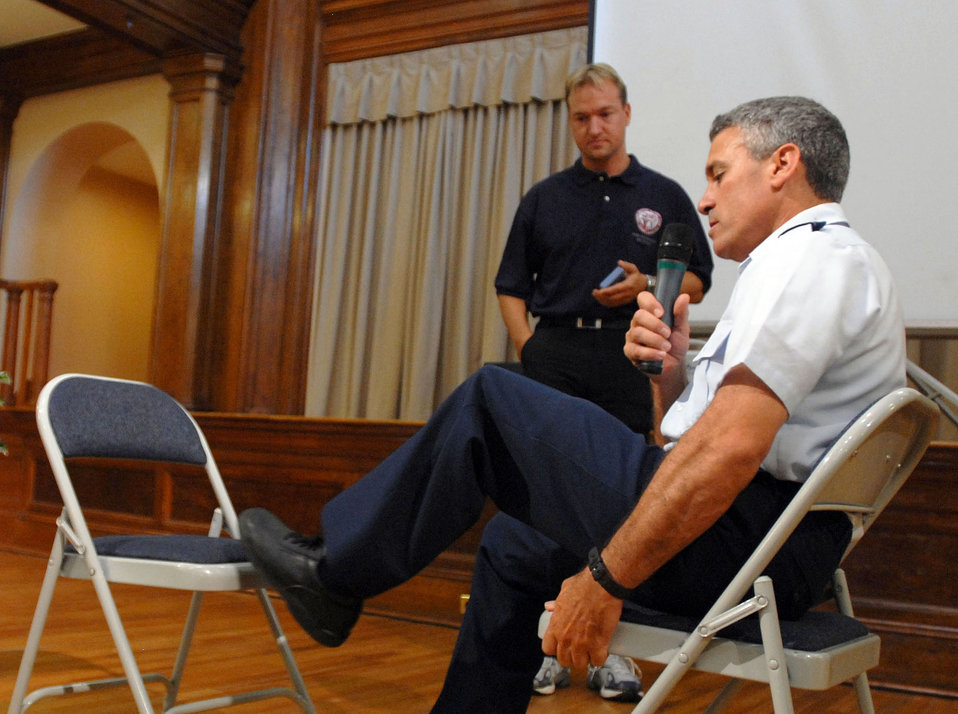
New prosthesis could help keep troops in the fight

Air Force Lt. Col. Andrew Lourake, an amputee who remained on active duty as a pilot, demonstrates July 17 how he manually switches modes on his computerized prosthesis as Sven Zarling observes. The colonel's current prosthetic leg has two modes, one for walking and one for flying. An improved prosthesis is being developed that will have up to 10 modes and allow for remote-controlled switching. Mr. Zarling is from Otto Bock HealthCare, the company developing the new prosthesis.